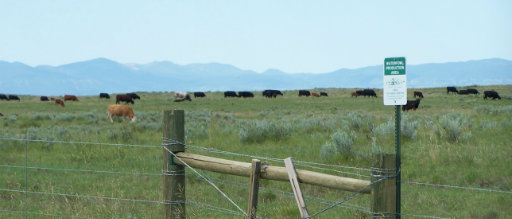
Grazing on Korsbeck WPA, Bowdoin NWR